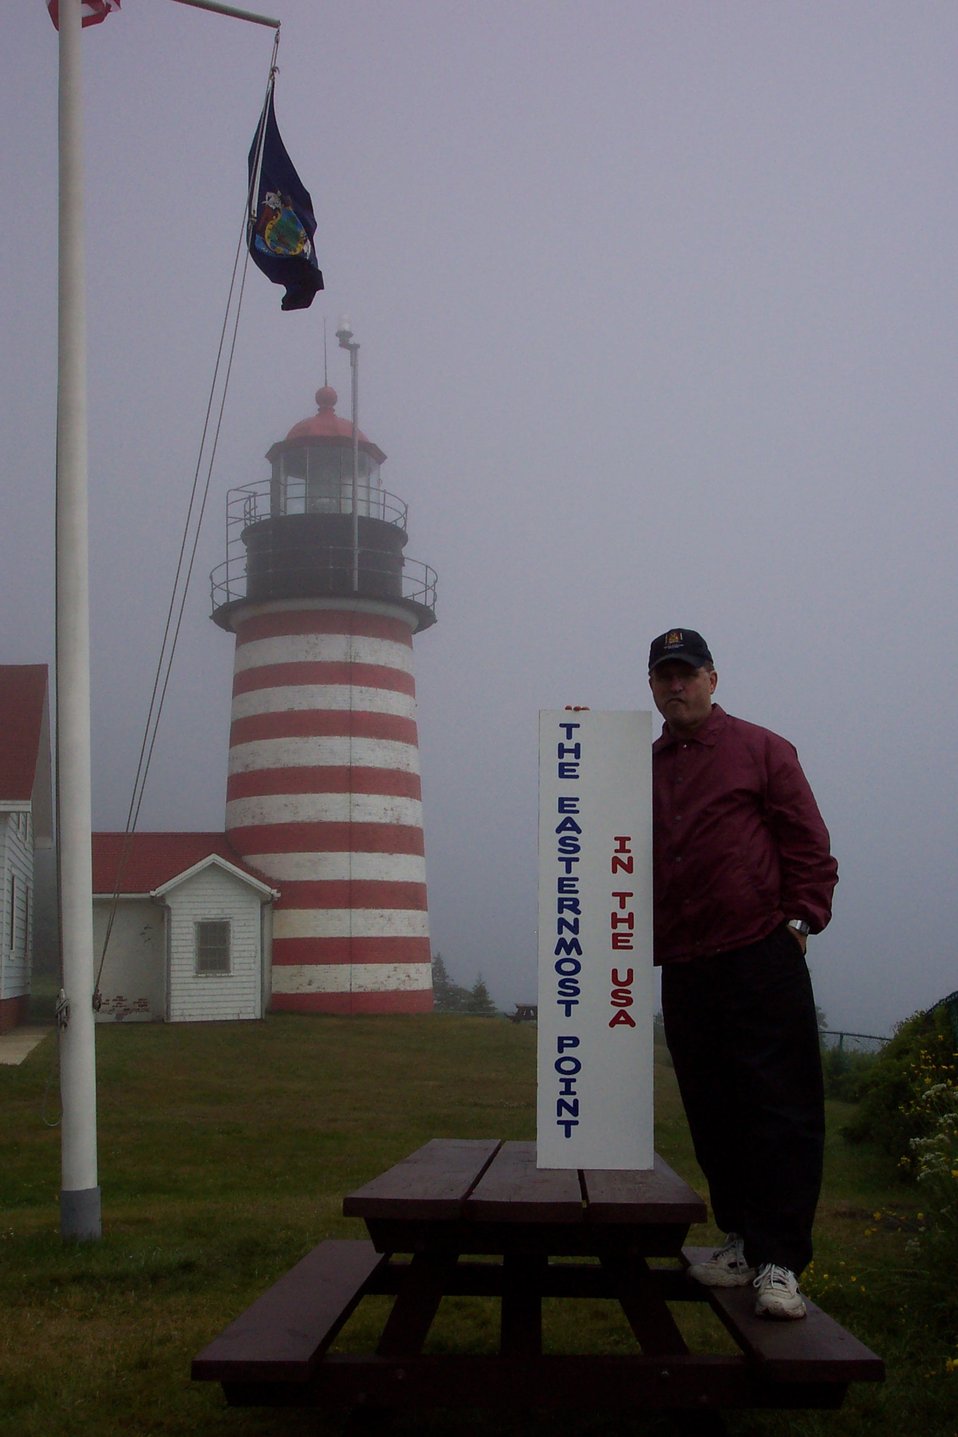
West Quoddy Head Lighthouse, the easternmost point in the contiguous United States.